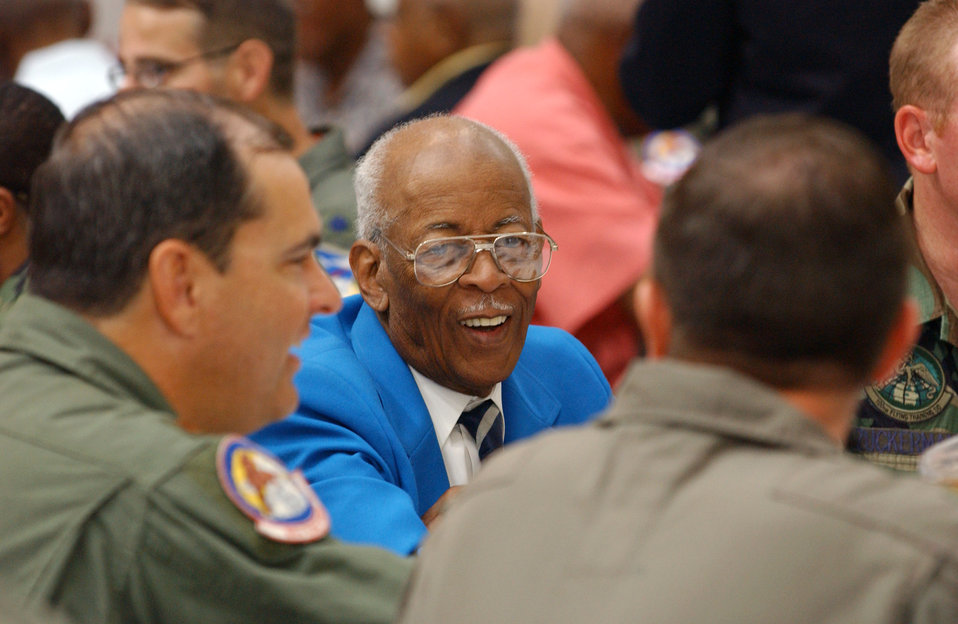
Tuskegee Airmen

A Tuskegee Airman speaks with aviators from the 944th Fighter Wing at Luke Air Force Base, Ariz., on Aug. 2 during the Tuskegee Airmen, Inc., 35th Annual National Convention. The organization exposes minority youth to aviation and aerospace technology.